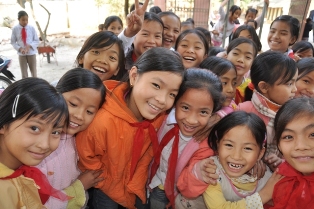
USAID provides household kits to families affected by flooding near Hanoi